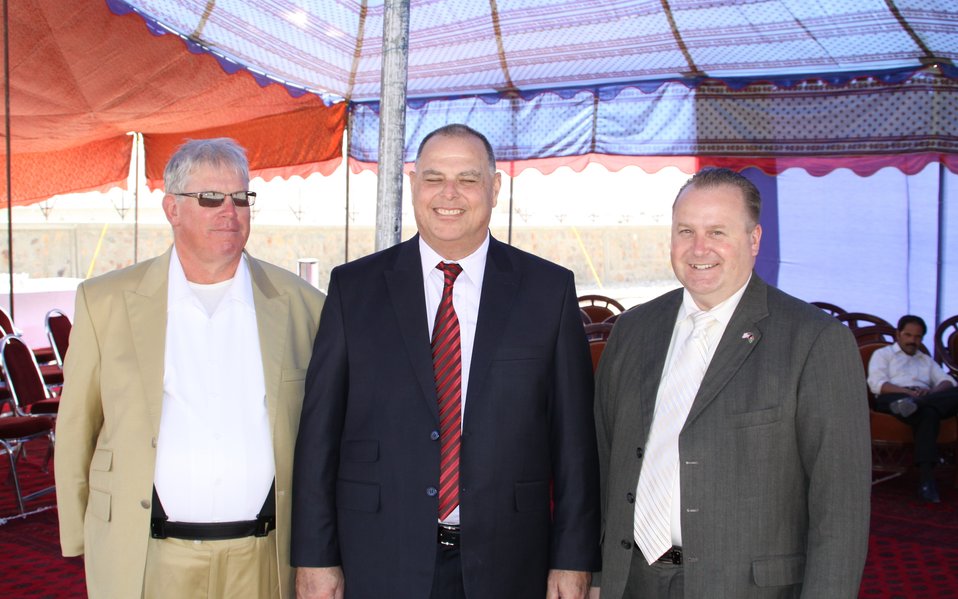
105 MW Tarakhil Power Plant Handover